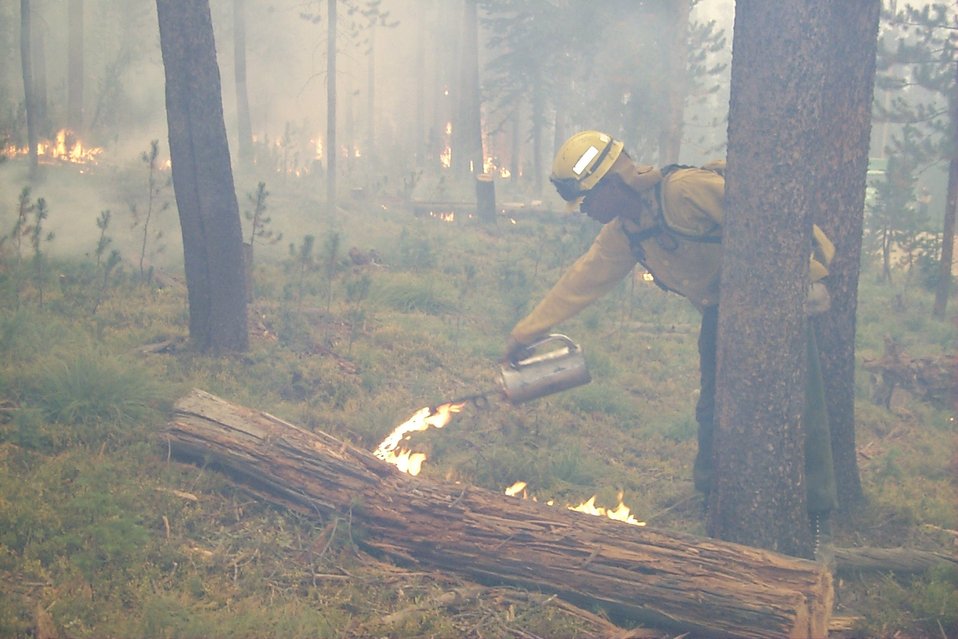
Controlled burn Fire Clearwater Fire Salmon Field Office USRD Upper Snake River District